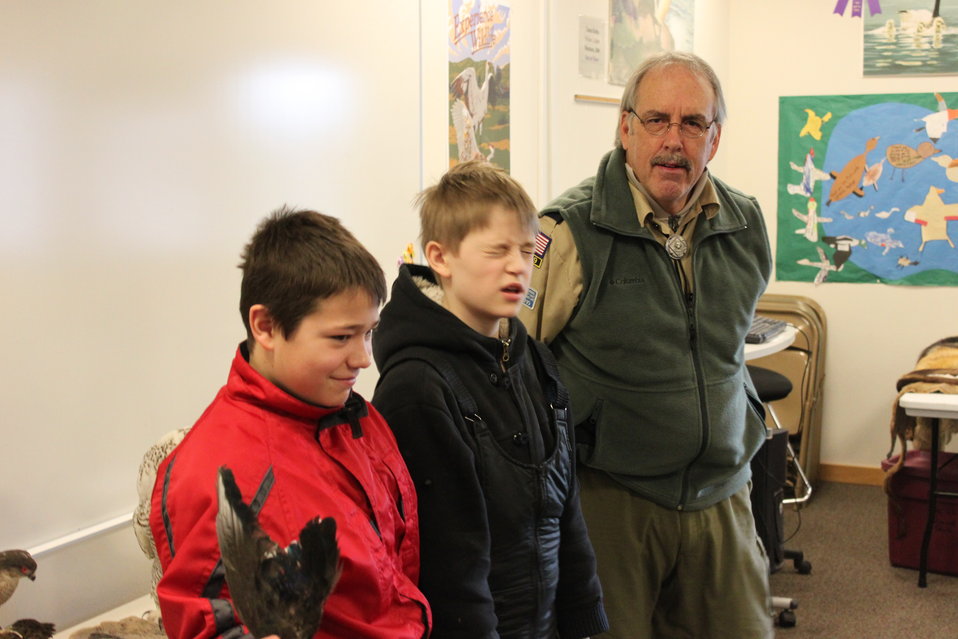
Wing Bee Presentation

Christmas Bird Count for Kids (CBC4Kids) adults and students did an activity, a “Wing Bee” (identifying duck wings using Ducks at a Distance and then did a mini presentation in front of everyone). Good introduction to thinking about size, shape, colors on a bird. Of course, waterfowl are big, slow and colorful; makes for easy identification in many cases…good for novice birders.